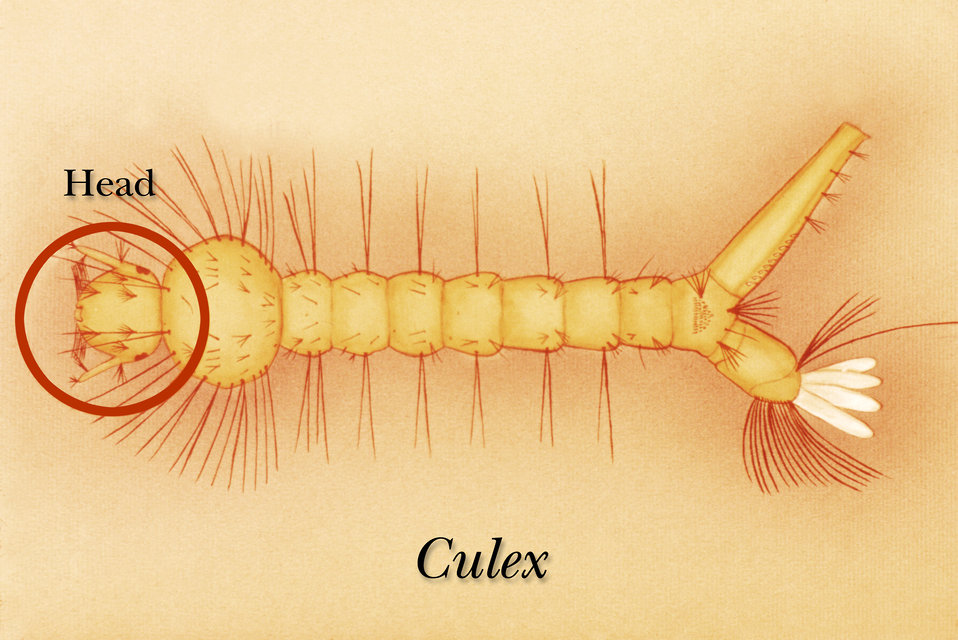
Illustration identifying the head, or cephalic region of a Culex mosquito larva.